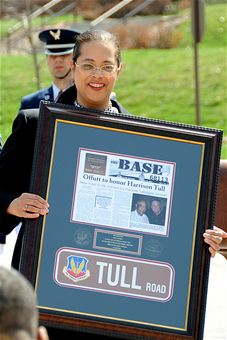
Tull Road dedication

Dr. Janet Tull, the daughter of the late Lt. Col. Harrison